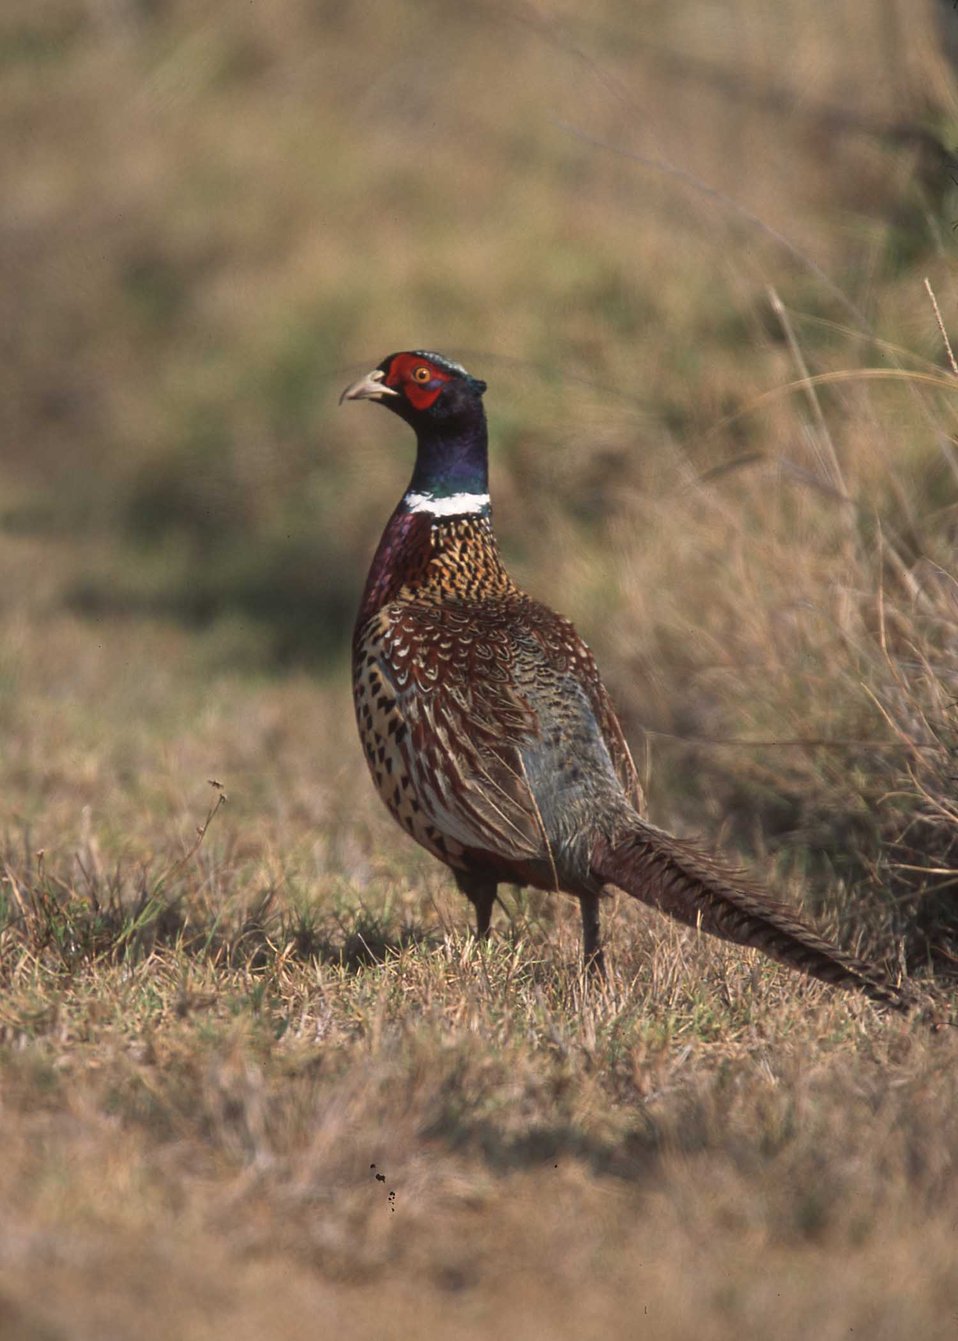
Pheasant in Hawaii.